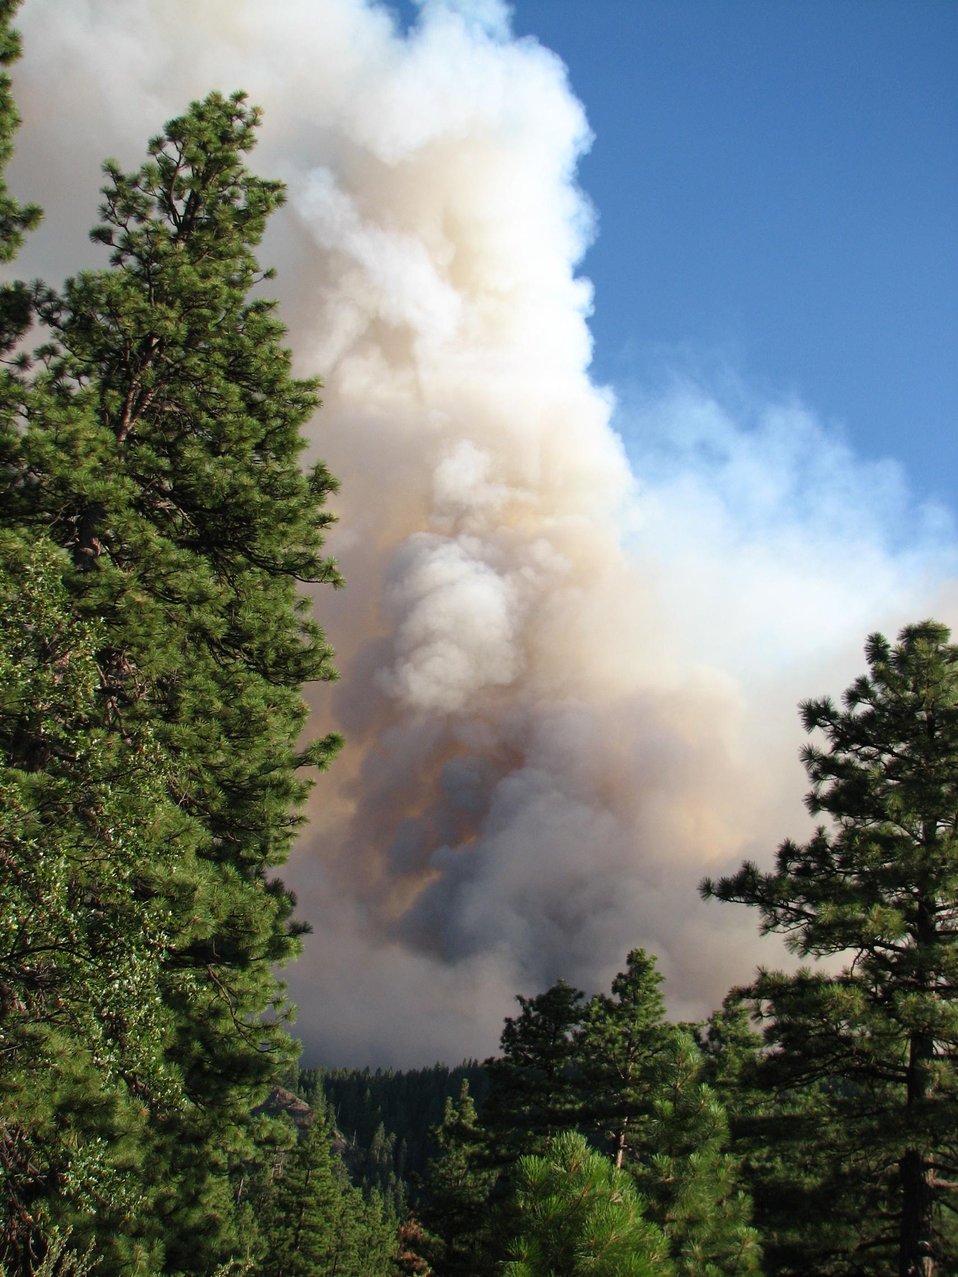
The Mile Marker 28 Fire near Goldendale, WA began on Jul. 24, 2013 is under investigation and has consumed approximately 20,337 acres. The fire is approximately 25% contained.